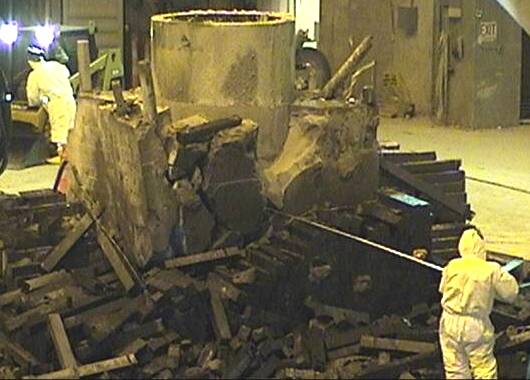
Materials Test Reactor

A radiological control technician obtains a reading on the Materials Test Reactor.